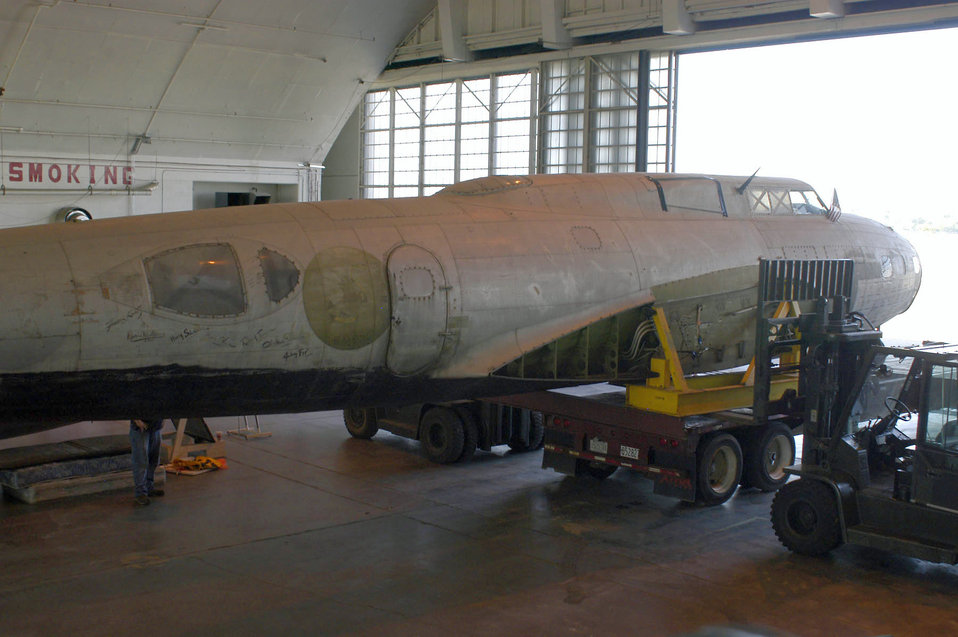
'The Swoose' finds new home at National Museum of the U.S. Air Force

Restoration crews work together to unload the fuselage of the B-17D The Swoose that recently arrived at the National Museum of the U.S. Air Force near Dayton, Ohio, from the National Air and Space Museum in Washington D.C.